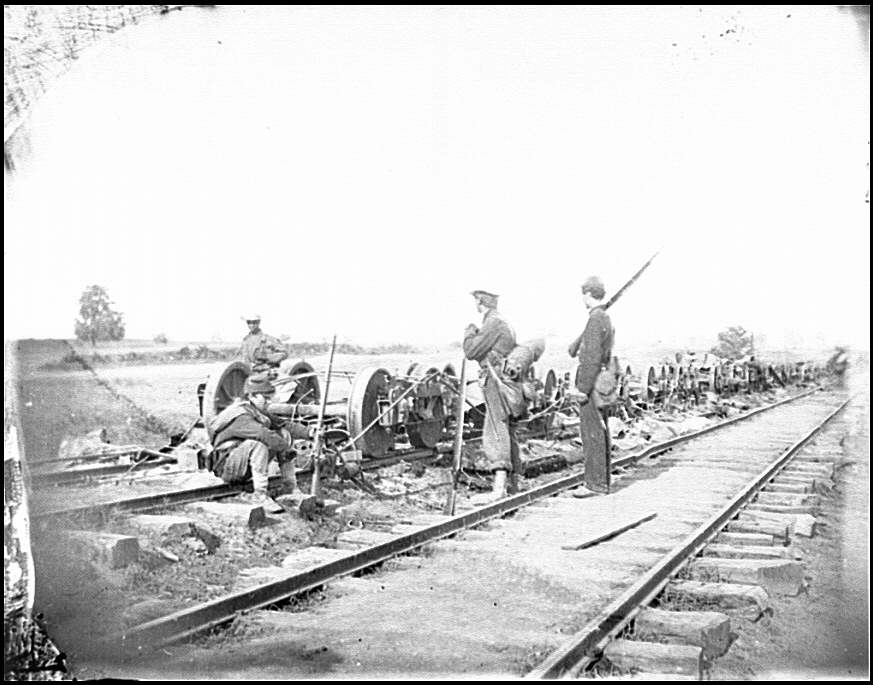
Manassas Junction 1862

From Library of Congress collection. The 2nd Battle of Manassas occurred in 1862, from which the Union retreated to Washington, D.C. and the Capitol became a hospital for causalities.